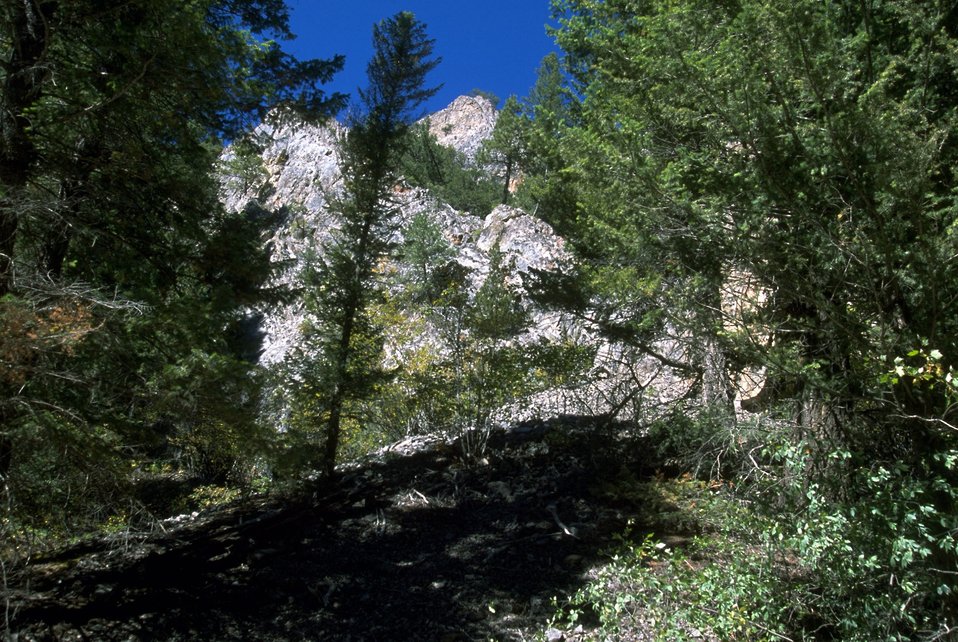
Rattler Gulch-Limestone Cliffs ACEC